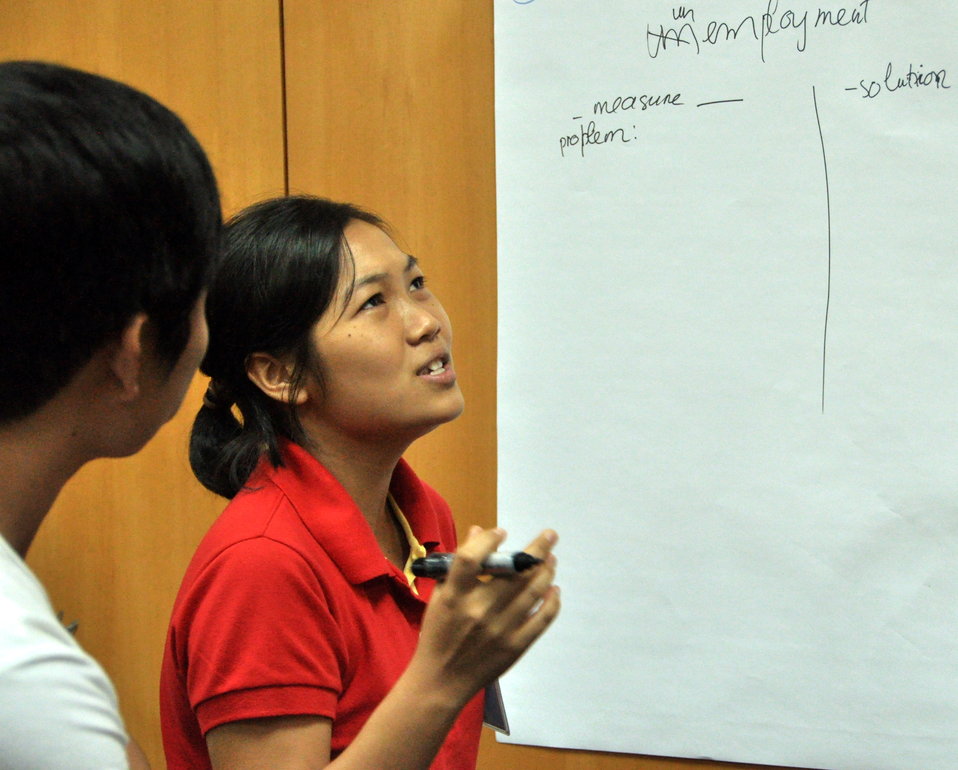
International Youth Day 2013: USAID hosts a lively discussion and group exercise on how youth can join in to advance development

Hanoi, August 12, 2013.